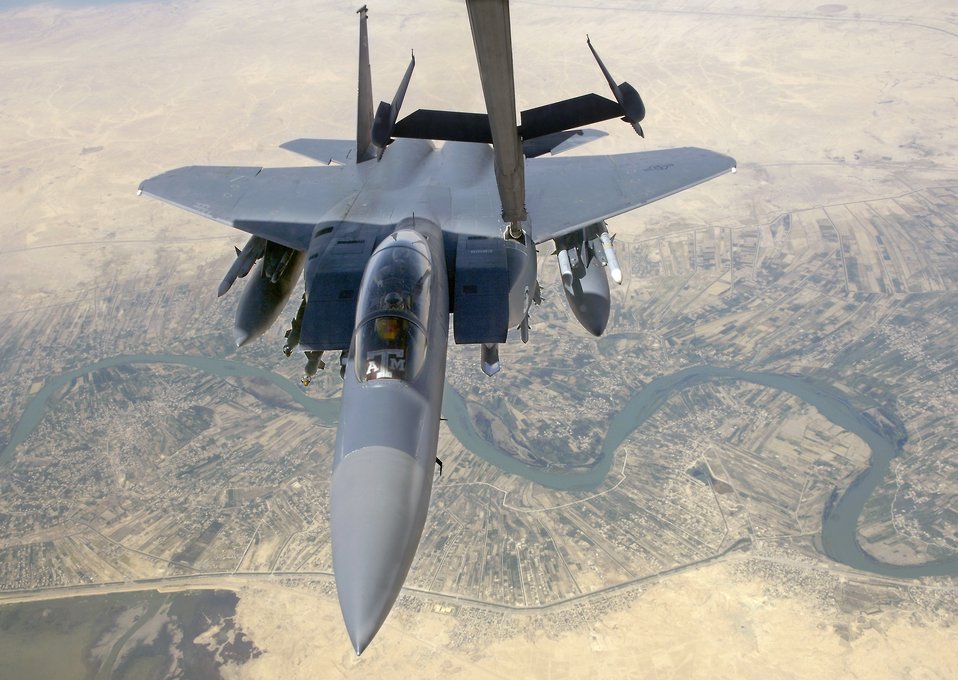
On a mission

Master Sgt. Todd McPeak refuels an F-15E Strike Eagle during an Operation Iraqi Freedom mission on July 18. Sergeant McPeak is a KC-10 Extender boom operator with the 908th Expeditionary Air Refueling Squadron.